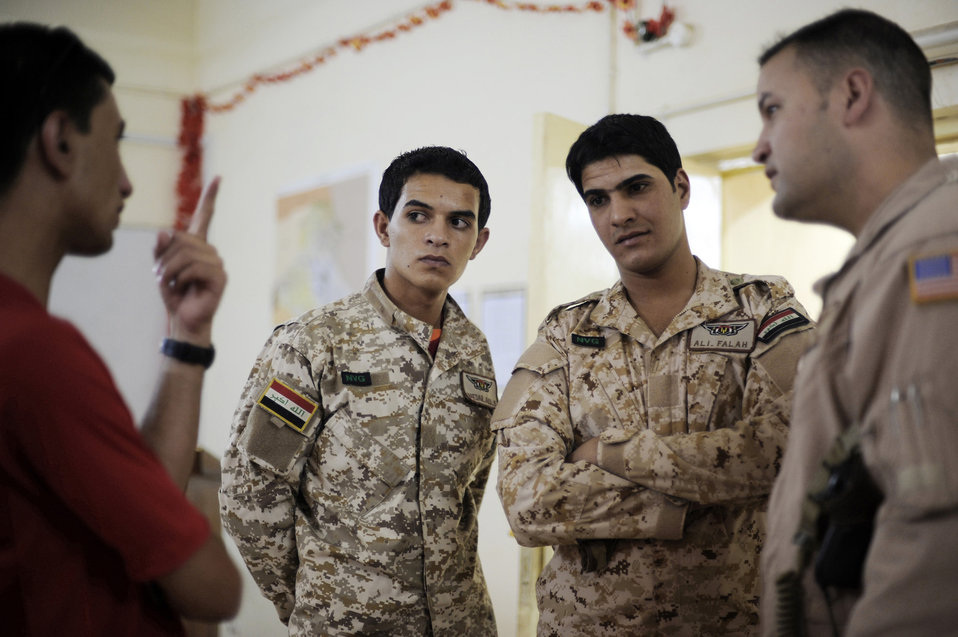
Airmen assist Iraqis with gunner training

Tech. Sgt. Onnez Rodriquez-Massas (far right) speaks through an interpreter to two Iraqi air force aerial gunners prior to a night mission July 12 at Camp Taji, Iraq. Sergeant Rodriguez-Massas is an aerial gunner assigned to the 721st Air Expeditionary Advisor Squadron and is deployed from Andrews Air Force Base, Md.